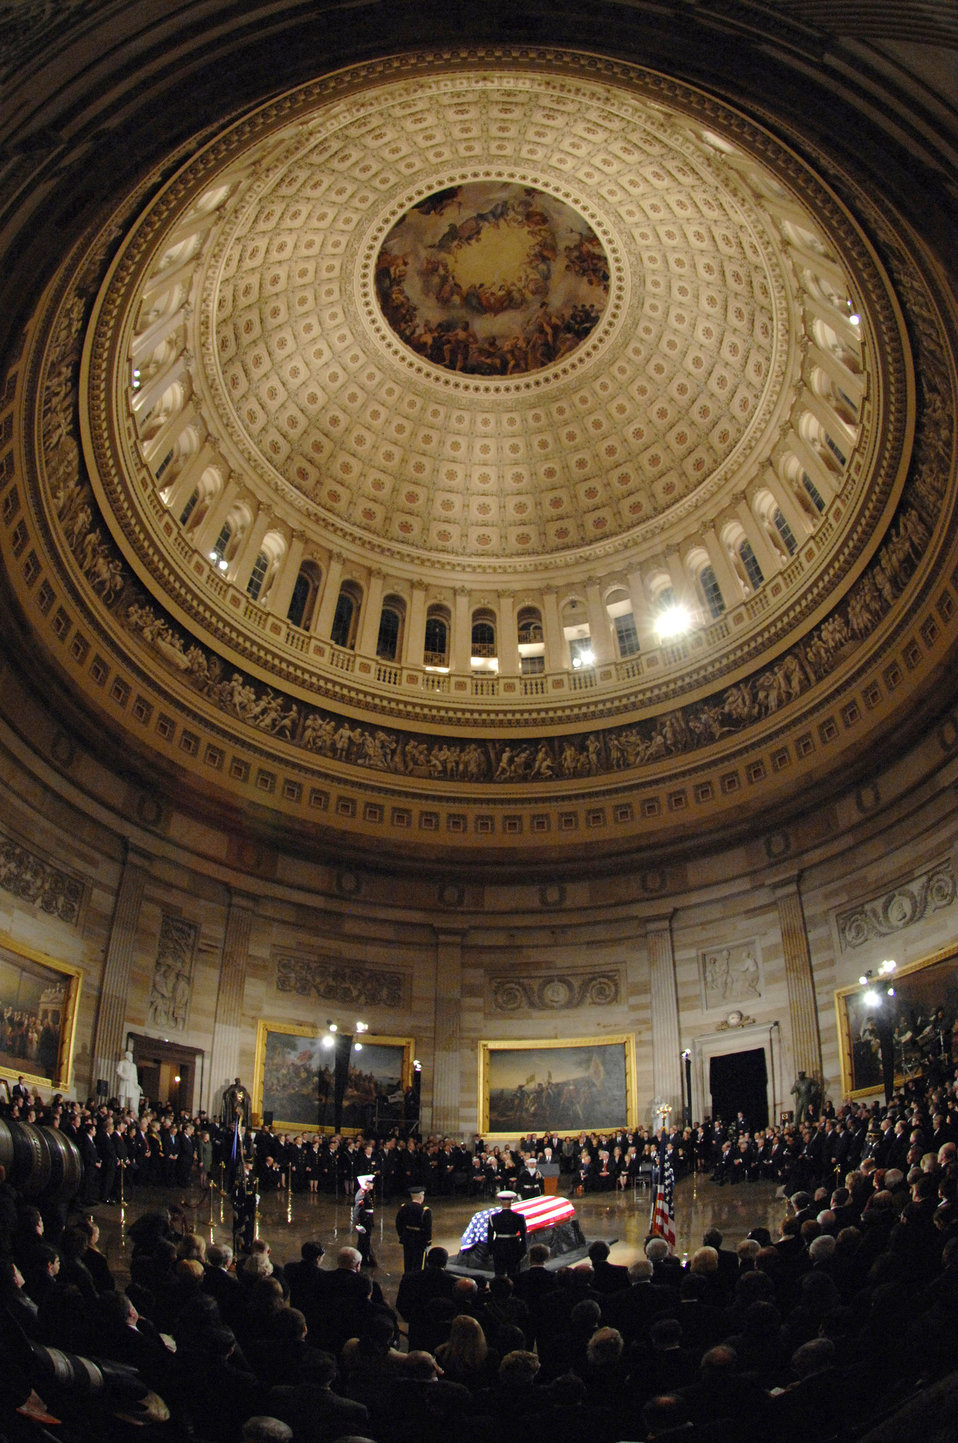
In memory

Family members, dignitaries and members of the U.S. Senate and House of Representatives honor former President Gerald R. Ford during a memorial service in the U.S. Capitol rotunda Dec. 30 in Washington, D.C.